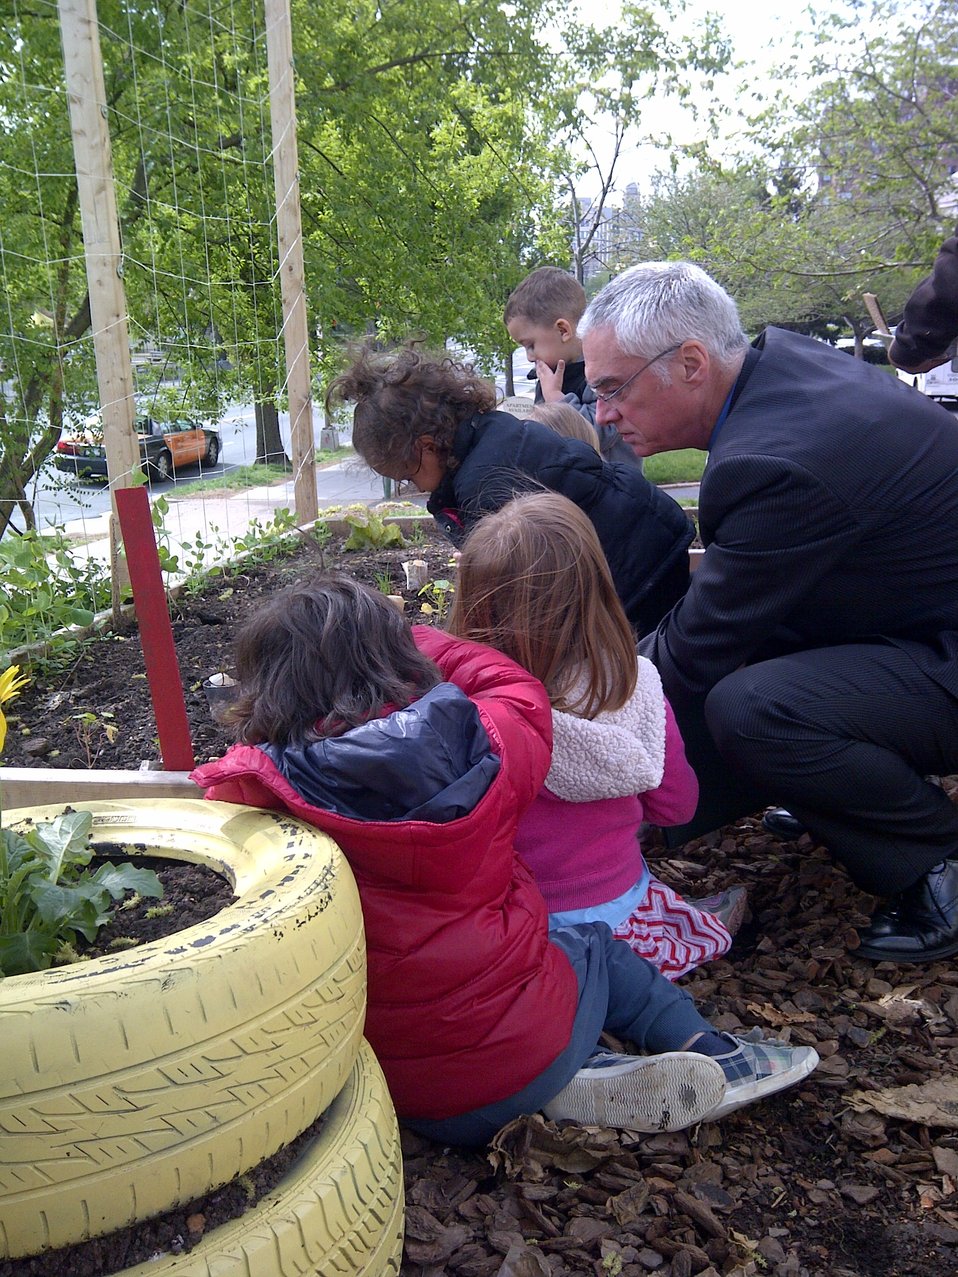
April 23, 2013 – Celebrating Earth Day with Kids

Acting Administrator Bob Perciasepe visits with children and helps in their garden at the Mundo Verde Bilingual Public Charter School. This school received a Green Ribbon from the U.S. Department of Education.

The Green Ribbon Award honors schools that are exemplary in reducing environmental impact and costs; improving the health and wellness of students and staff; and providing effective environmental and sustainability education, which incorporates STEM, civic skills and green career pathways.

Keep up with our Acting Administrator @ www.facebook.com/EPAadmin